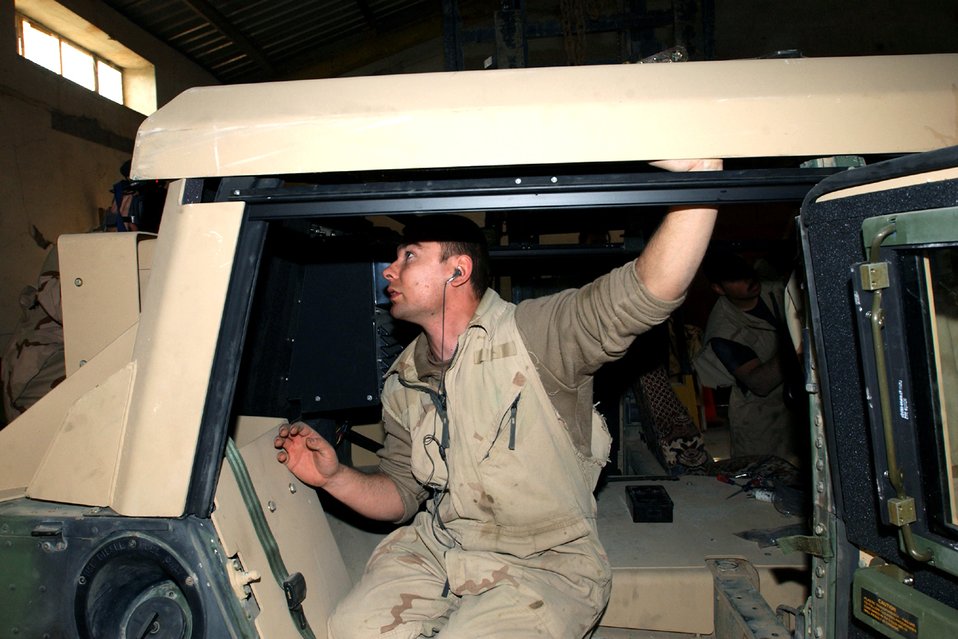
Armoring up

KIRKUK AIR BASE, Iraq -- Senior Airman Adam Gozdziewicz secures a new armored roof on a Humvee here. Airman Gozdziewicz is part of a U.S. Central Command Air Forces